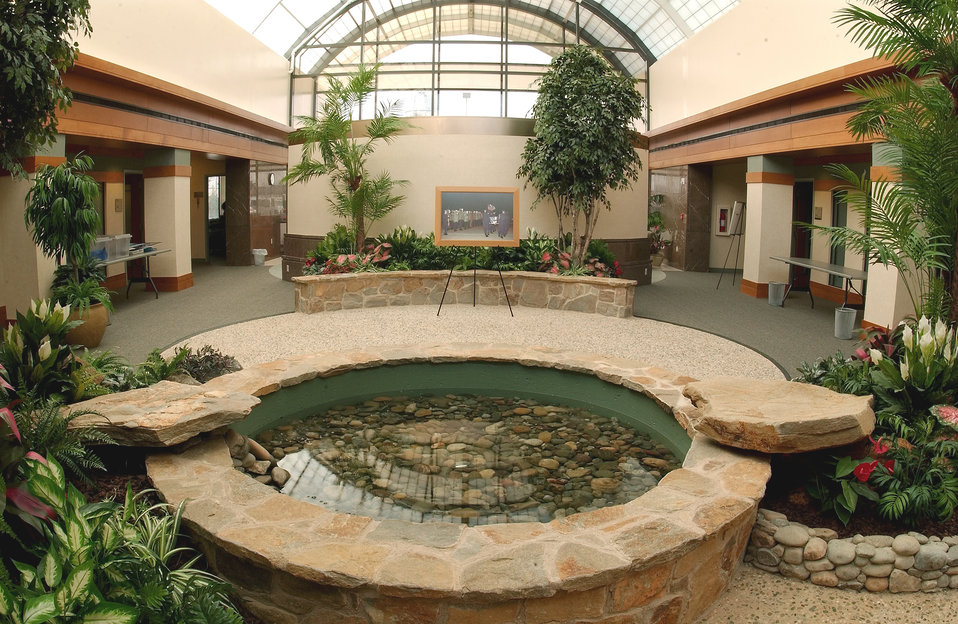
New mortuary opens

DOVER AIR FORCE BASE, Del. -- The atrium at the Charles C. Carson Center for Mortuary Affairs here gives the staff a place to get away from their sterile work environment and relax peacefully. The new mortuary opened Oct. 28, replacing a 48-year-old facility. It is the Defense Department's only stateside mortuary.